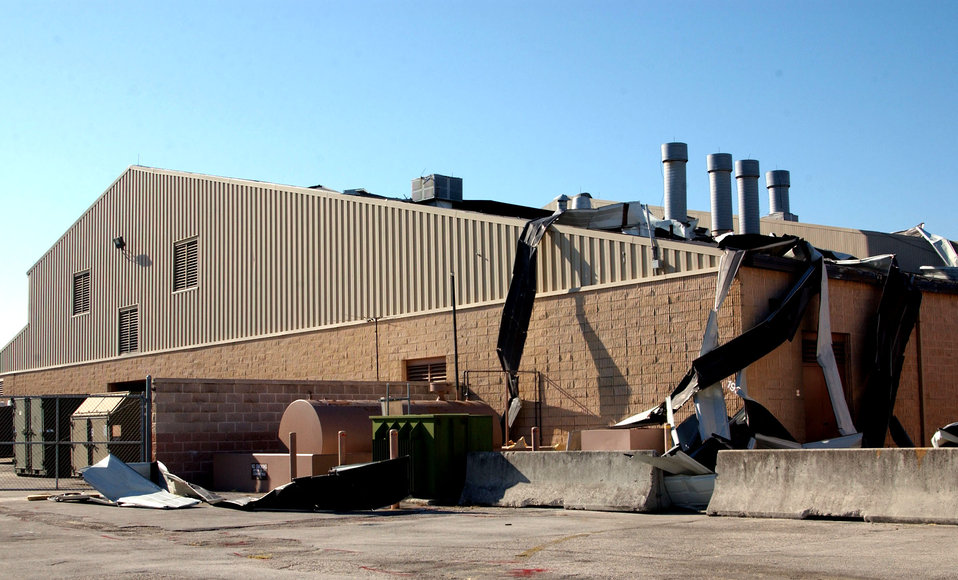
Wilma relief

HOMESTEAD AIR RESERVE BASE, Fla. (AFPN) -- Four buildings sustained major roof damage and seven others sustained minor roof damage when Hurricane Wilma hit here. In addition, the Oct. 24 storm, knocked down trees and scattered debris over most of the base